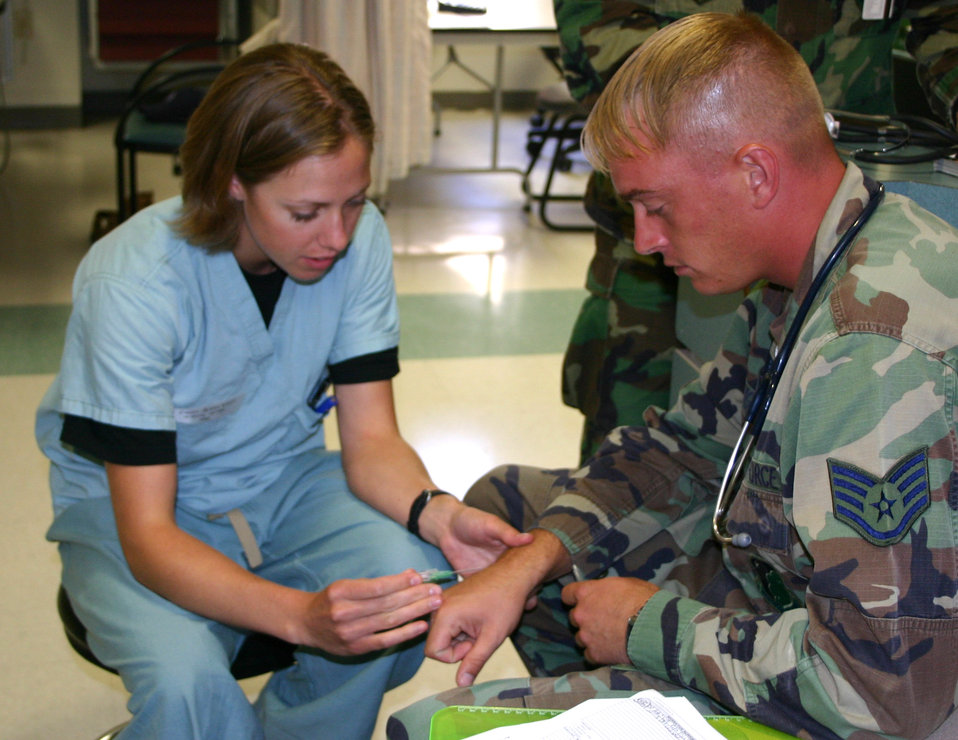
Future of Air Force Medical Service train at Wilford Hall

Staff Sgt. Christopher Wright observes Cadet 1st Class Alicia Weott to ensure she is following proper needle injection procedures at Wilford Hall Medical Center at Lackland Air Force Base, Texas, on Wednesday, July 5. Cadet Weott, an ROTC cadet from Montana State University, is a student in the Operation Air Force: Nurse Orientation Program. She is learning the basic operations of an Air Force Medical facility. Sergeant Wright is a medical technician assigned to the 959th Surgical Operations Squadron.